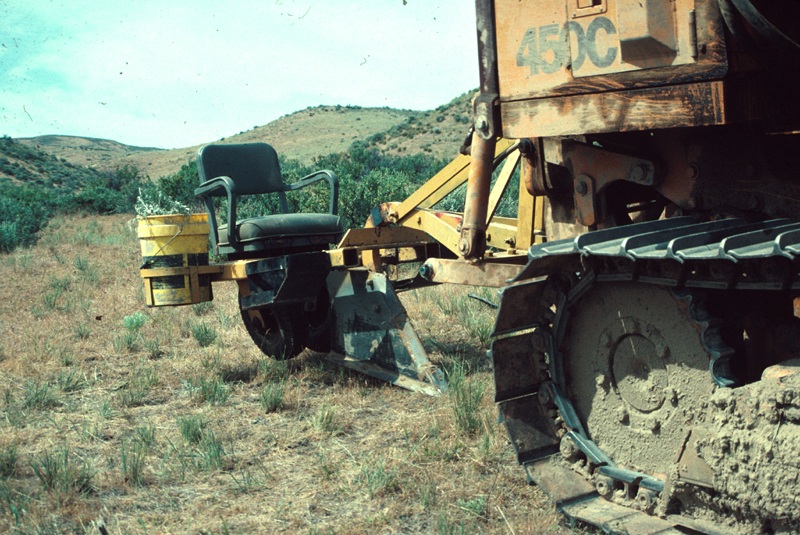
Tree Planter Boise Front Range Restoration Project Lower Snake River District